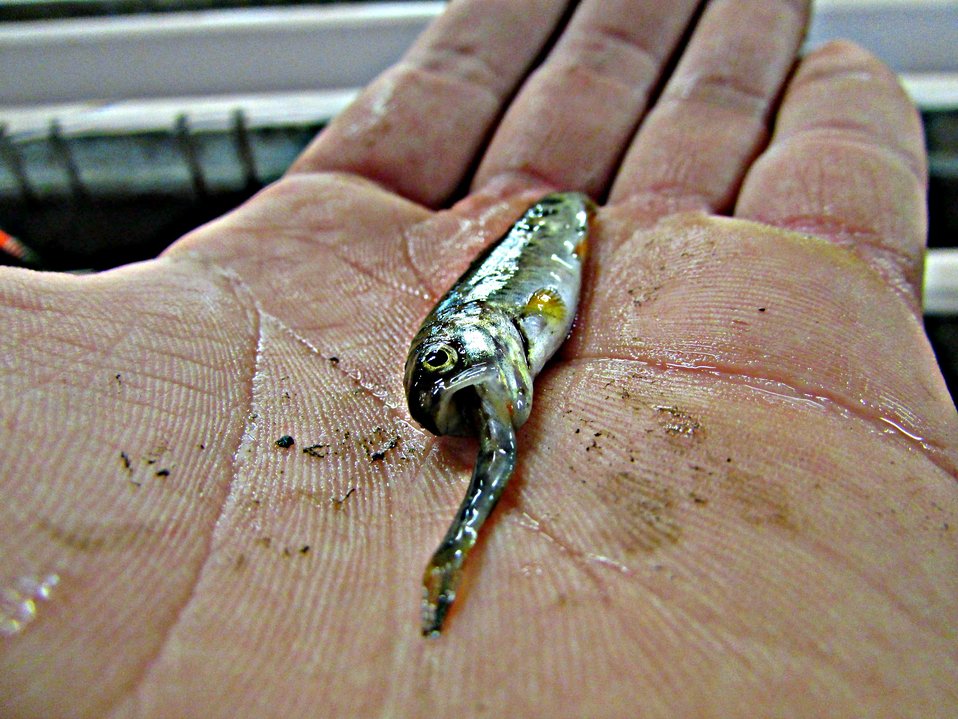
Cannibalistic Trout

Sometimes our trout turn on each other and no one wins. Here is an example of a cannibalistic trout that couldn't finish its meal.